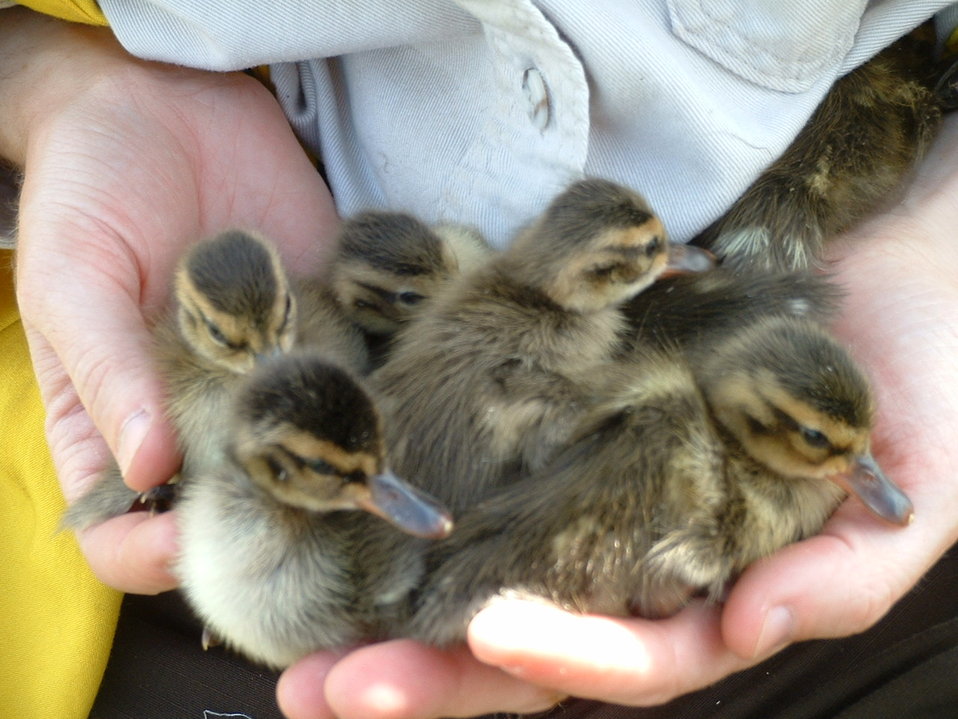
Ducklings, Bowdoin NWR

Ducklings in Refuge staff hands at Bowdoin NWR.